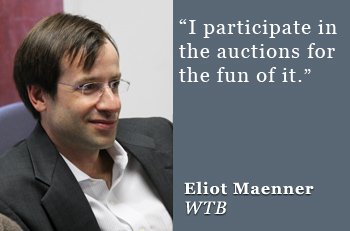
eliot-maenner